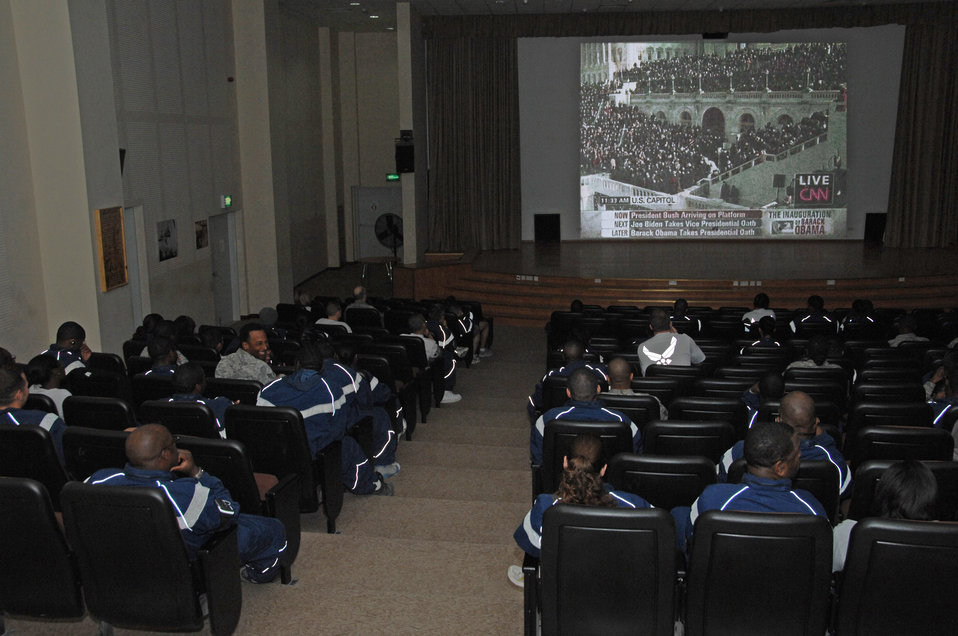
Airmen witness history from Southwest Asia

Members of the 386th Air Expeditionary Wing come together to watch the inauguration ceremony of President Barack Obama and Vice President Joe Biden Jan. 20 in the theater at an air base in Southwest Asia.